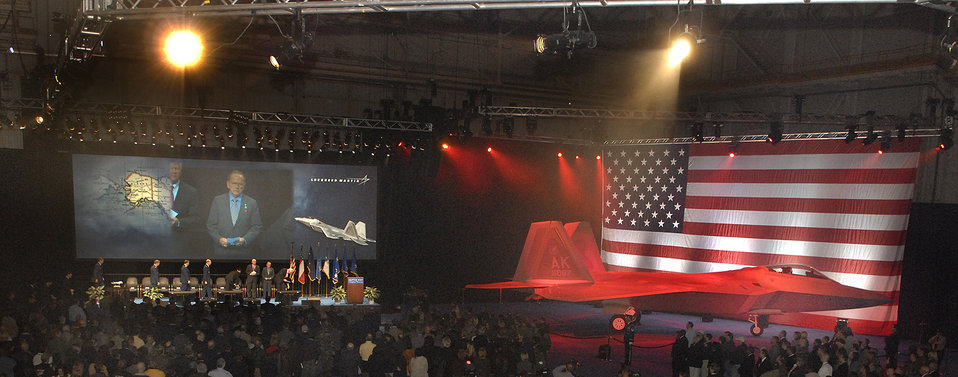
First F-22 bound for Pacific unveiled

Representatives from the Air Force and Lockheed Martin gathered to see the roll-out of Pacific Air Forces' first F-22 Raptor Feb 12 at Marietta, Ga. This F-22 is the first of several that will be assigned to PACAF at Elmendorf Air Force Base, Alaska. The F-22 possesses a sophisticated sensor suite allowing the pilot to track, identify, shoot and kill air-to-air threats before being detected.